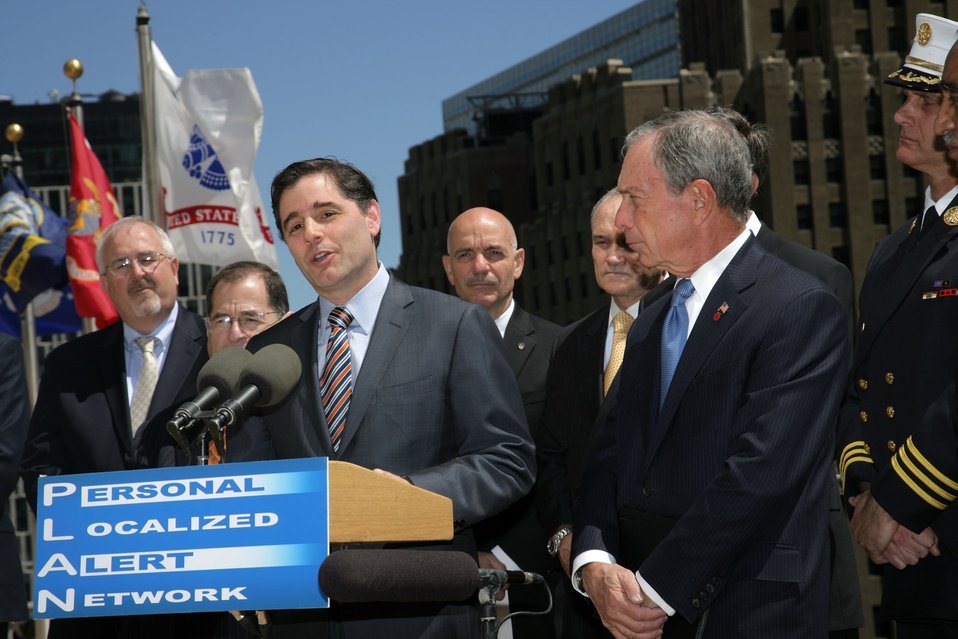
Chairman Genachowski PLAN launch event